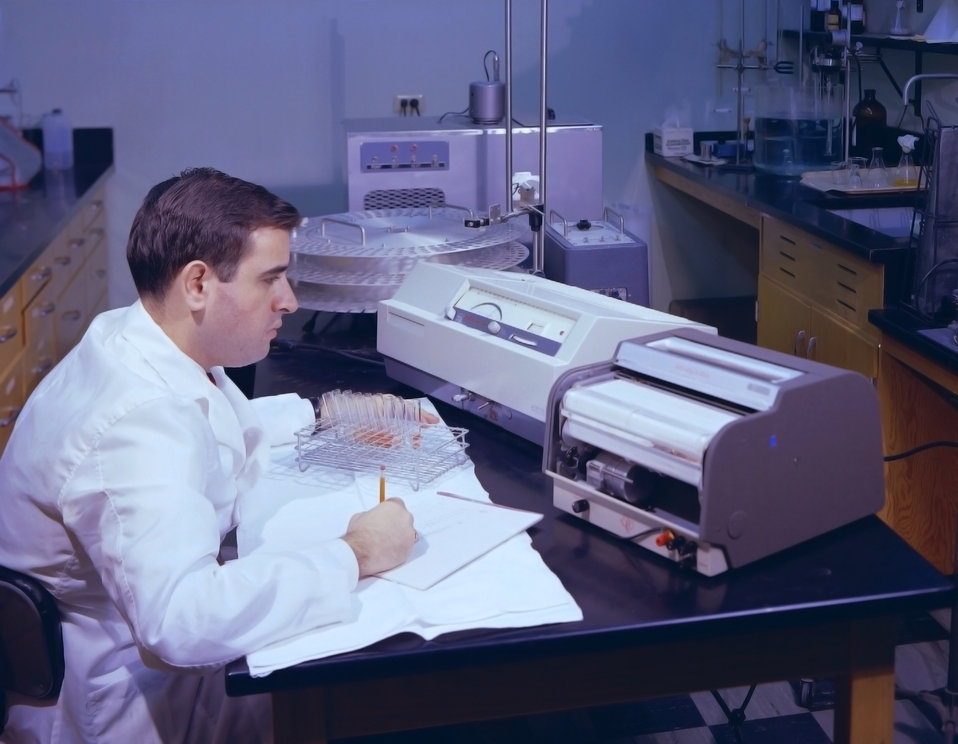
This historic 1963 photograph depicted Dr. Schulbind, as he was performing a streptolysin determination study, by measuring sample levels of oxyhemoglobin.